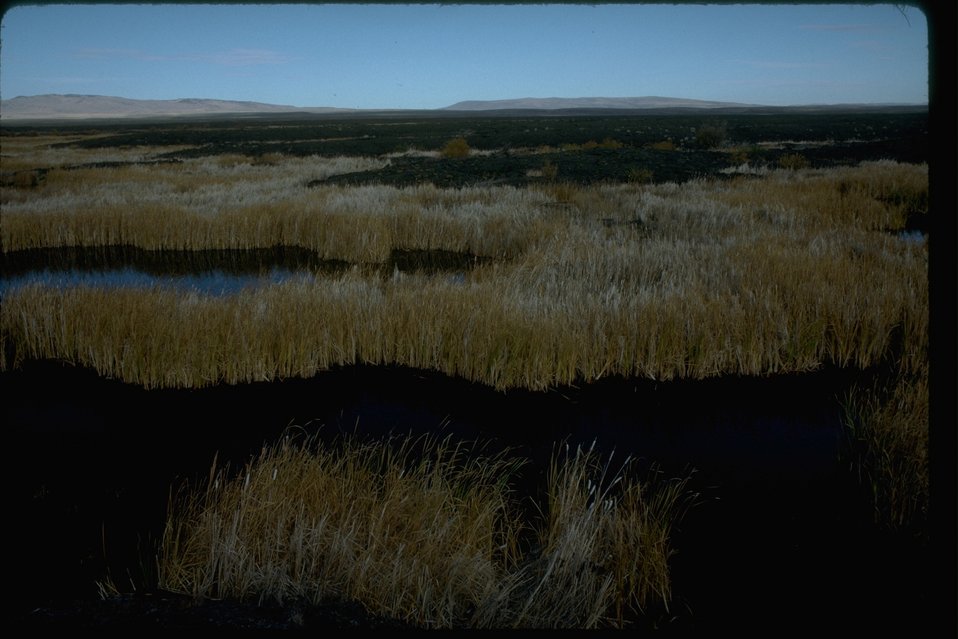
Aerial shot of Batch Lake. OR 3-128